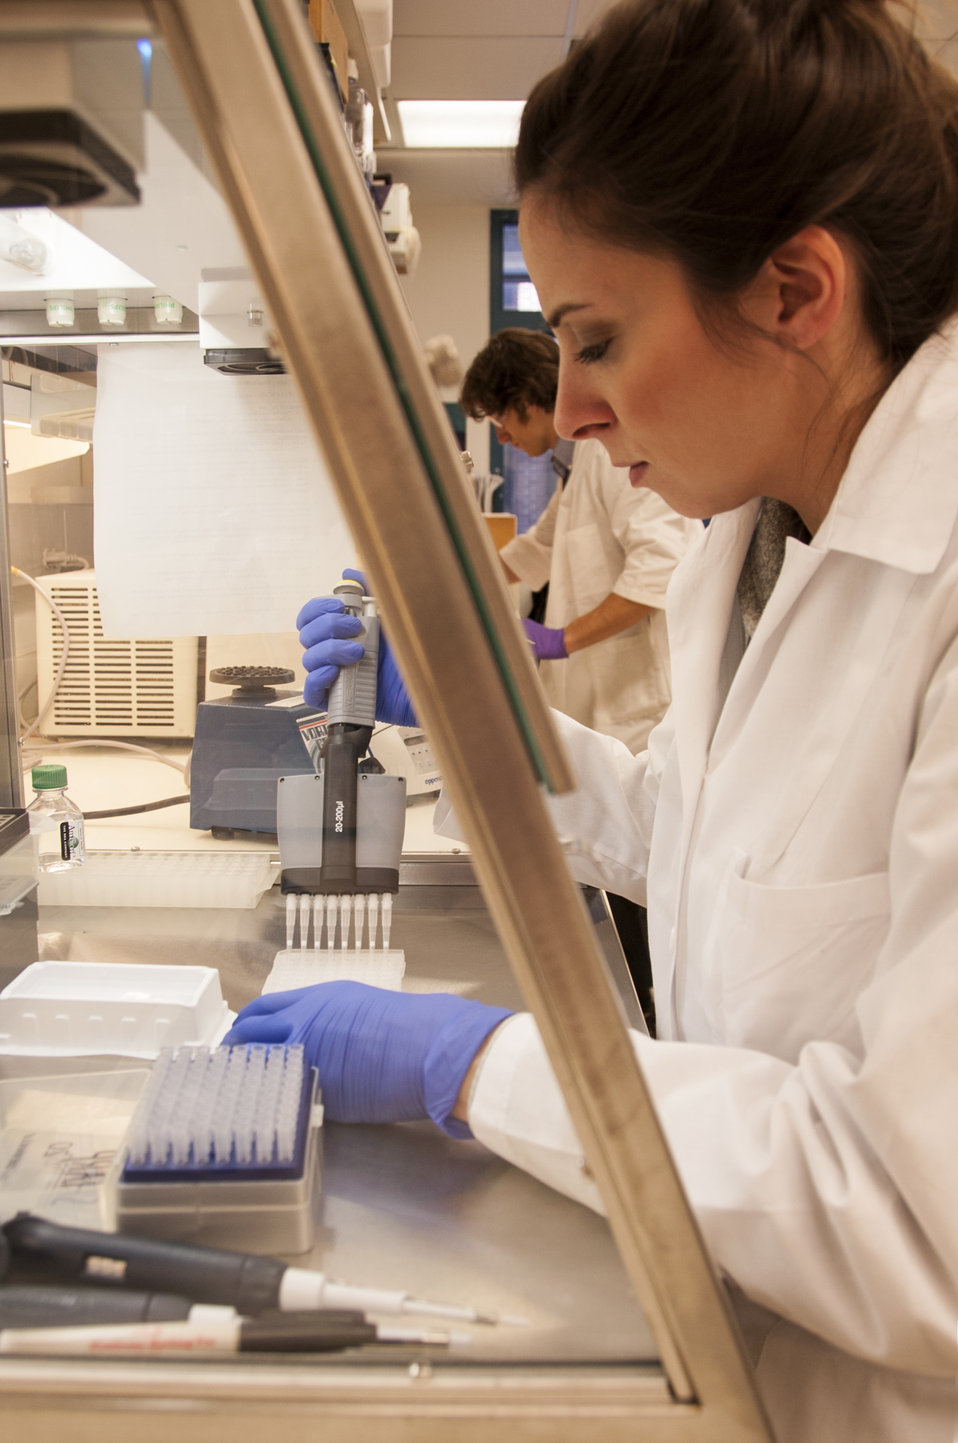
Stem Cell Research (0443)

Jessica Lo Surdo, M.S. (foreground), an FDA staff scientist, studies chain reactions in stem cells in an FDA laboratory on the National Institutes of Health campus in Bethesda, Md. Ross Marklein, Ph.D., a post-doctoral research fellow (background), records findings.

To learn more about stem cell research, read this FDA Consumer Update:

Adult Stem Cell Research Shows Promise

This photo is free of all copyright restrictions and available for use and redistribution without permission. Credit to the U.S. Food and Drug Administration is appreciated but not required.

Privacy and use information: www.flickr.com/people/fdaphotos/